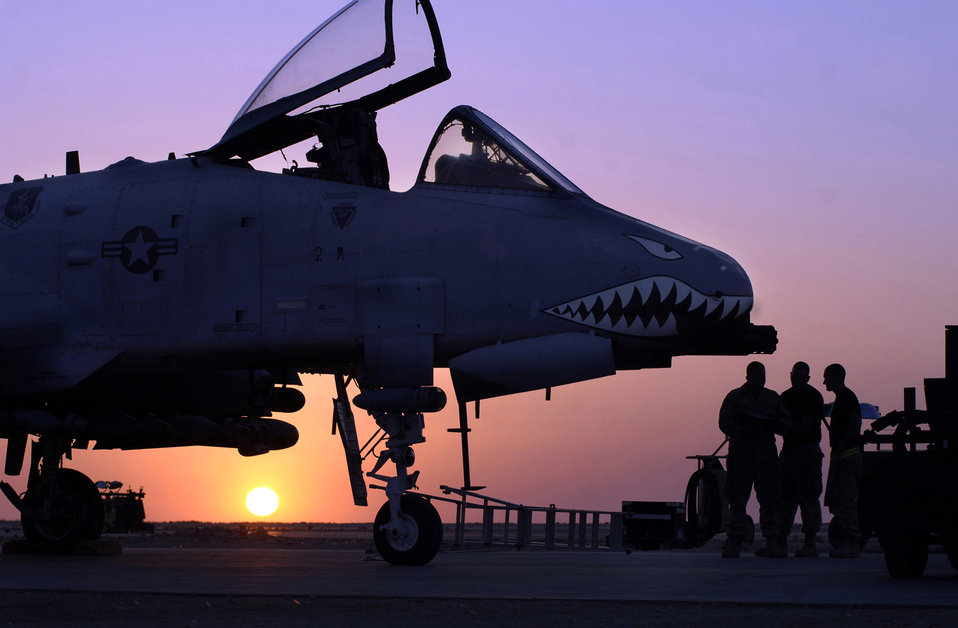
Nov. 21 airpower summary: A-10s bring close-air support

Senior Airman Joseph Cordero, Staff Sgt. Andrew House and Staff Sgt. Barrett Read trouble shoot an electronic error on an A-10 Thunderbolt II on the flightline at Al Asad Air Base, Iraq. An A-10 like this one, provided close-air support and performed shows of force Nov. 21 to deter enemy activity in Afghanistan.